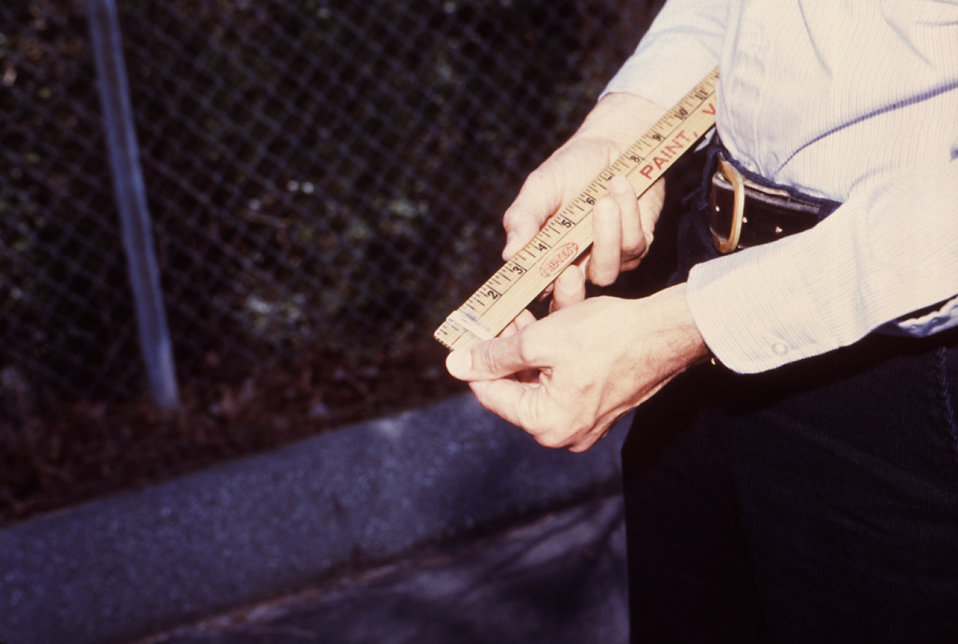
This 1981 photograph depicted a field technician as he attached a fresh glass microscope slide to the end of a yardstick.